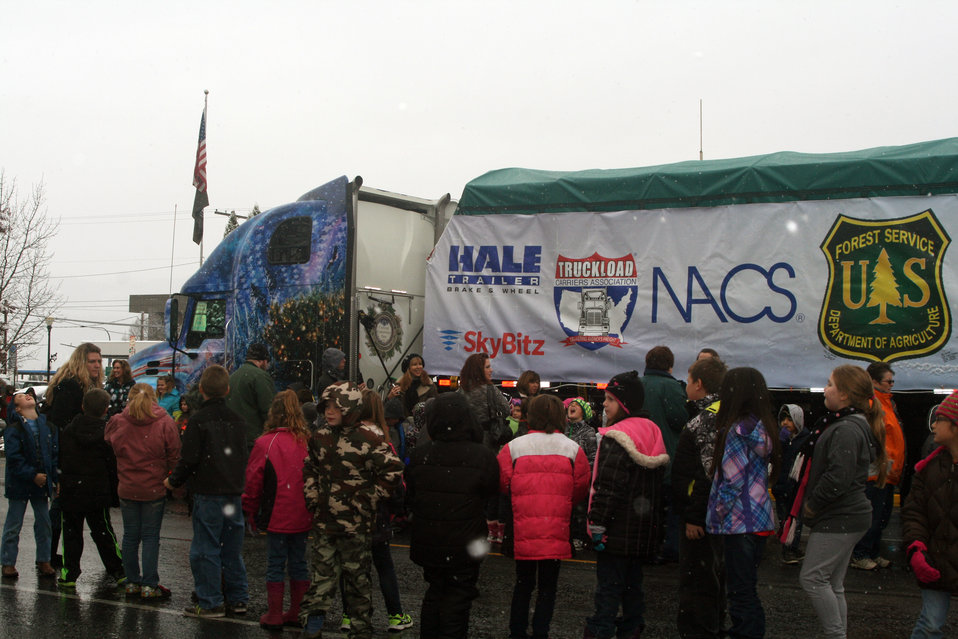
Visitors view the official 2013 Capitol Christmas Tree on Nov. 4, 2013. The Capitol Christmas Tree is an 88-foot tall Engelmann spruce that was harvested at Colville National Forest in Washington on Nov. 1, 2013.